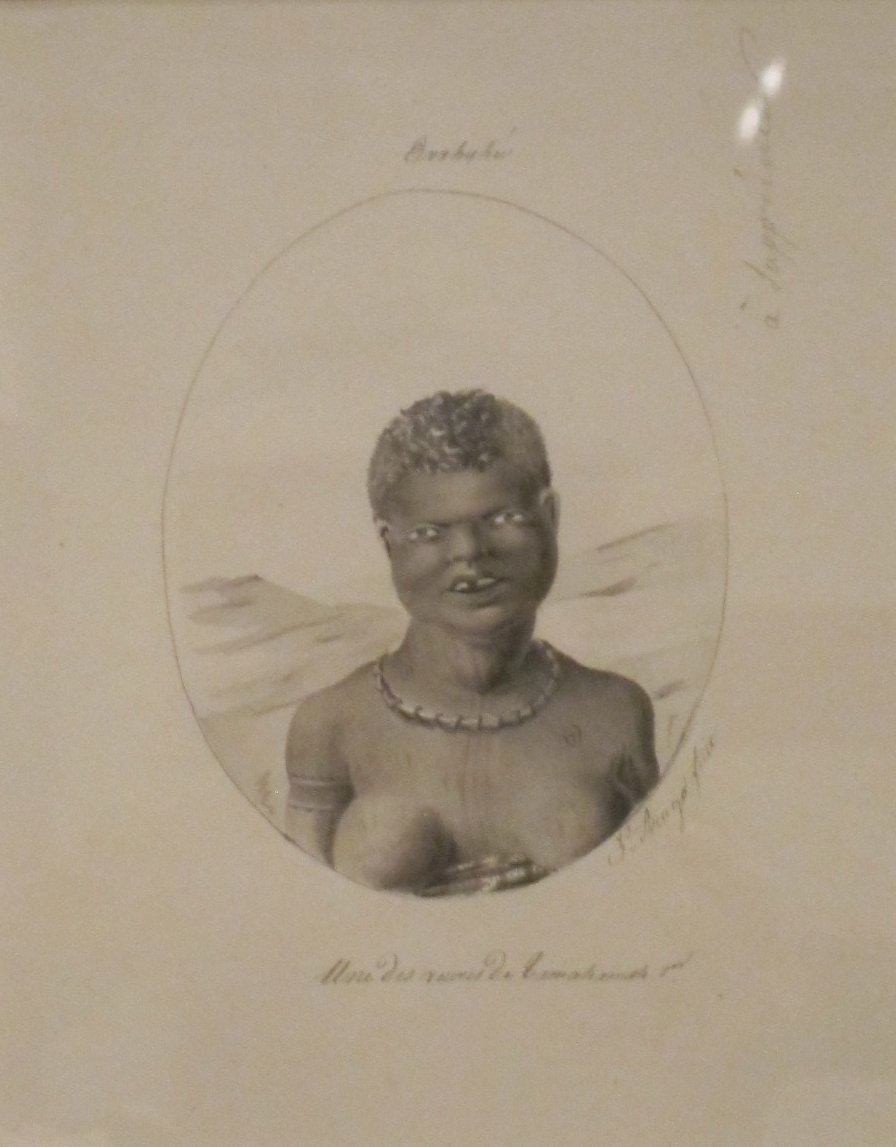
'Hawaii, a Widow of Kamehameha I' by Jacques Arago, Honolulu Museum of Art